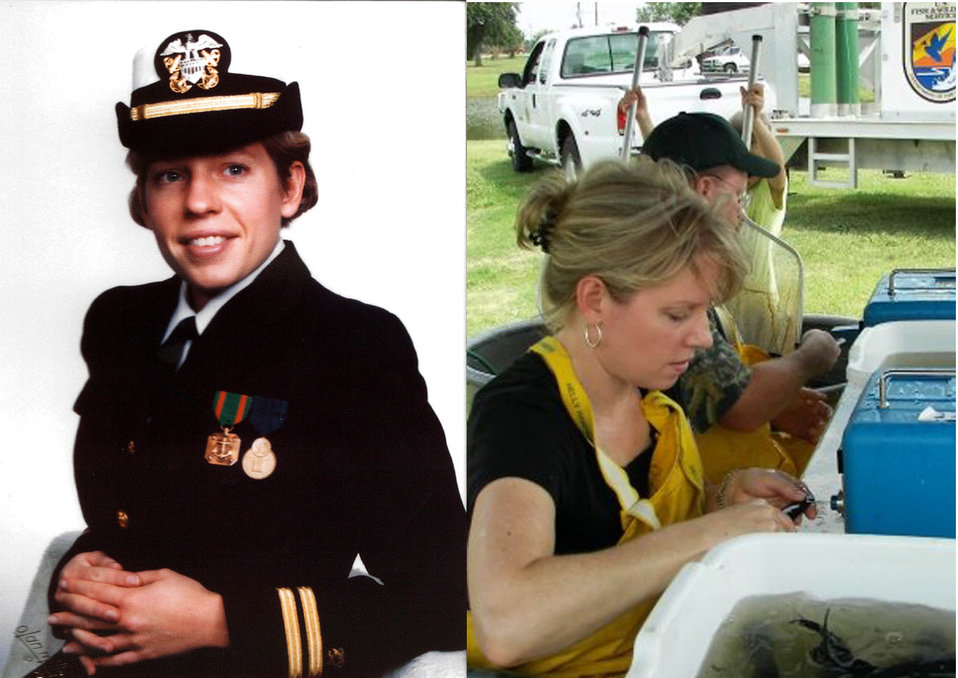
Jackie Parrish .
Jackie Parrish entered the U.S. Navy by way of the U.S. Naval Academy in Annapolis, MD in July 1981. Upon graduation in 1985 with a degree in Chemistry, she served as the Public Works Officer and Legal Officer at the Naval Communications Unit, Washington DC and served on several, short-term assignments to Germany. In 1987 she transferred into the Civil Engineer Corps and was assigned to the Navy Public Works Center in San Diego, CA where she worked with Navy units all over San Diego on various construction projects. She left the Navy in 1991 and took a civilian position as the Navy’s Staff Civil Engineer for military housing. Her favorite Navy experience was a Naval Academy summer training deployment with the U.S. Coast Guard, conducting a fisheries patrol in the North Pacific Ocean, near Alaska..
.
Since then, she has worked on cleaning up closing bases with EPA and DoD; served at OMB overseeing military construction and cleanup of radioactive waste across the DOE nuclear weapons complex; and worked on local Public Health preparedness issues at the Centers for Disease Control. .
.
She joined the Fish & Wildlife Service’s Southeast Region in 1993 as the Assistant Regional Director for Budget & Administration. While she likes what she does to support field operations from Atlanta, she loves the rare occasions when she gets to help out in the field. In her spare time, she enjoys spending time outside with her three children, running, and teaching ballet.